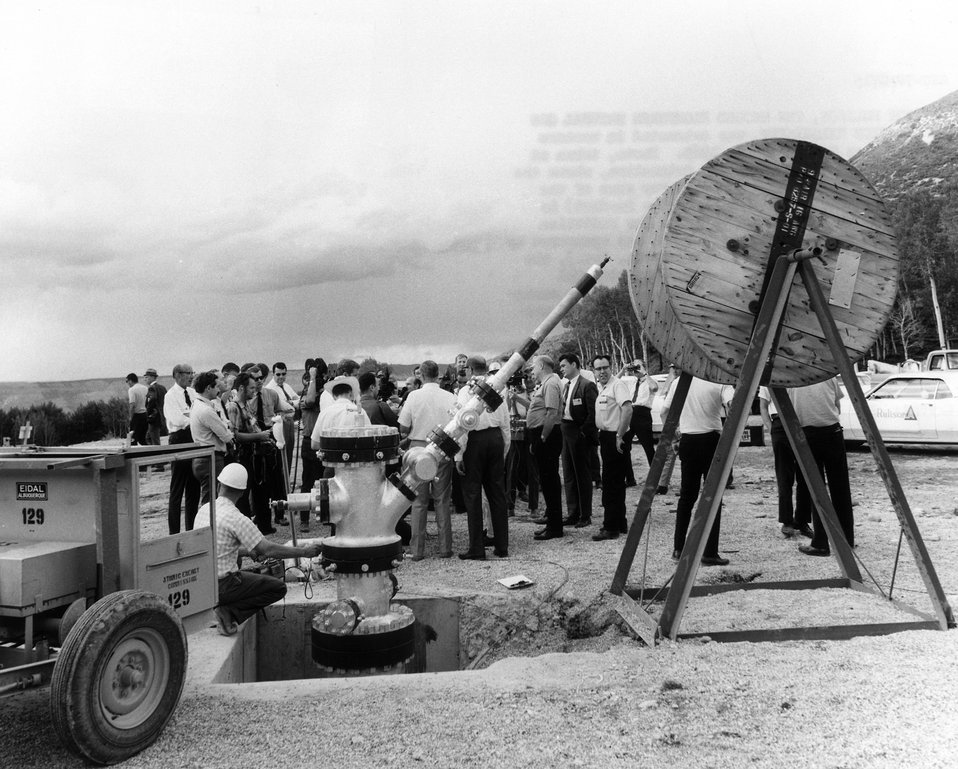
Photo, taken at ground zero shortly after the detonation, shows the post-shot briefing that was held for some of the observers. Circa 1969.